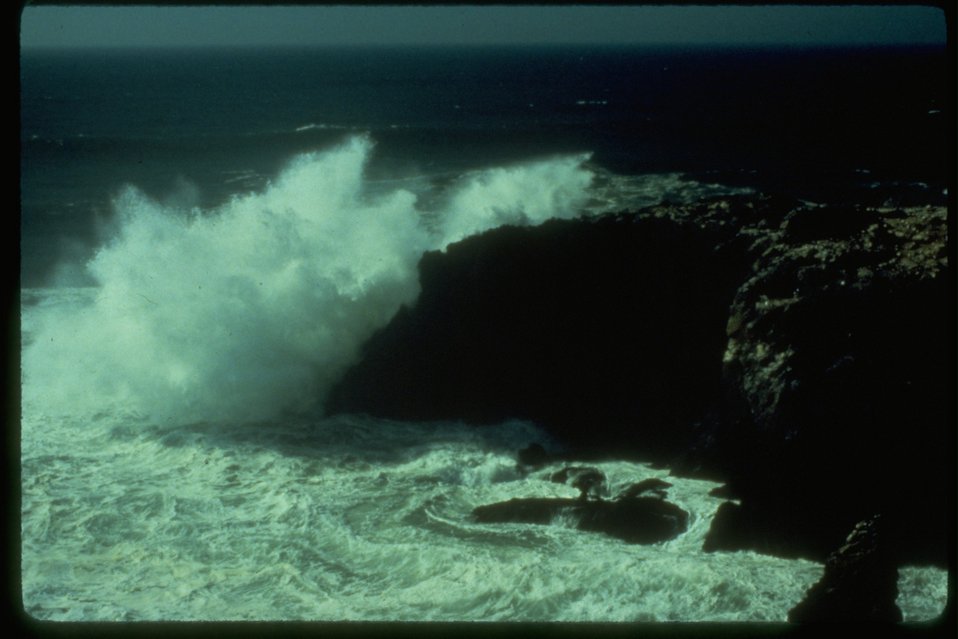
Storm waves hitting cliff near Yaquina Head lighthouse.